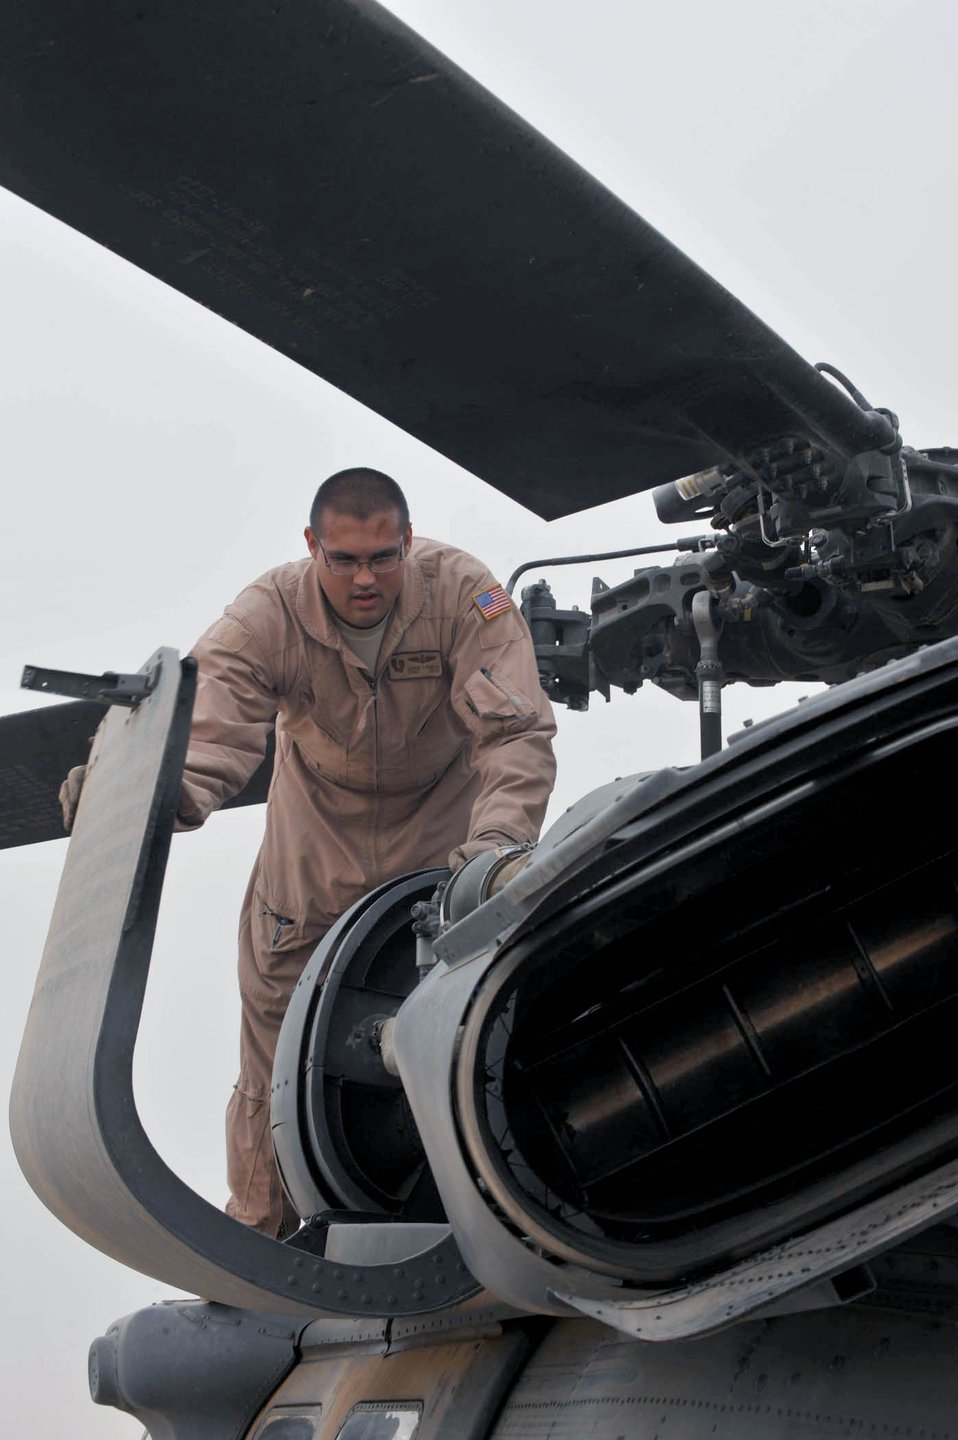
Everything checks out here

Staff Sgt. Dave Lamica preflights an HH-60 Pave Hawk helicopter at Joint Base Balad, Iraq, May 15, 2010, before a training flight. Sergeant Lamica is a flight engineer assigned to the 64th Expeditionary Rescue Squadron.